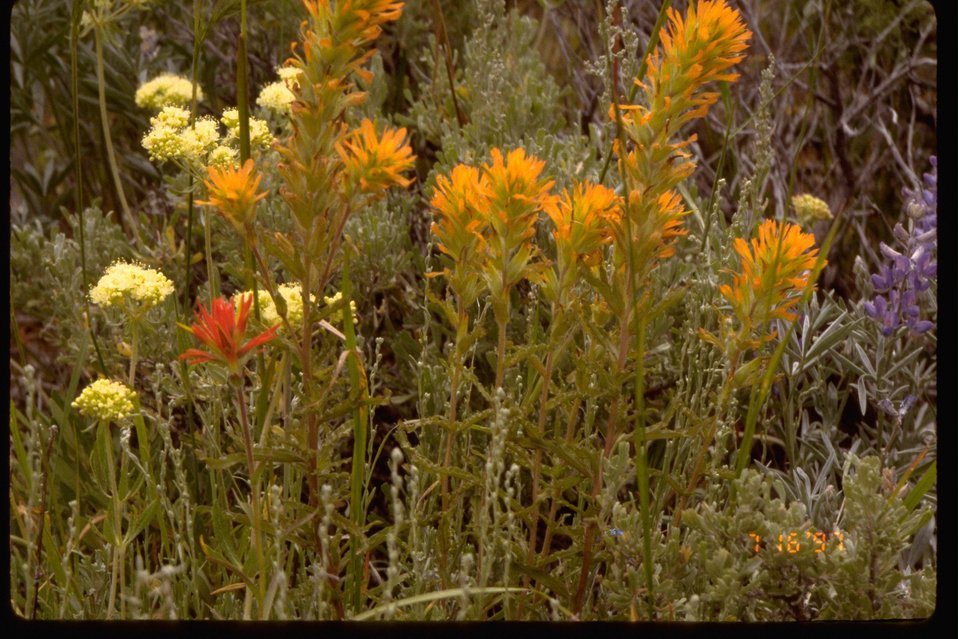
Indian Paintbrush on the Steens Mountain.